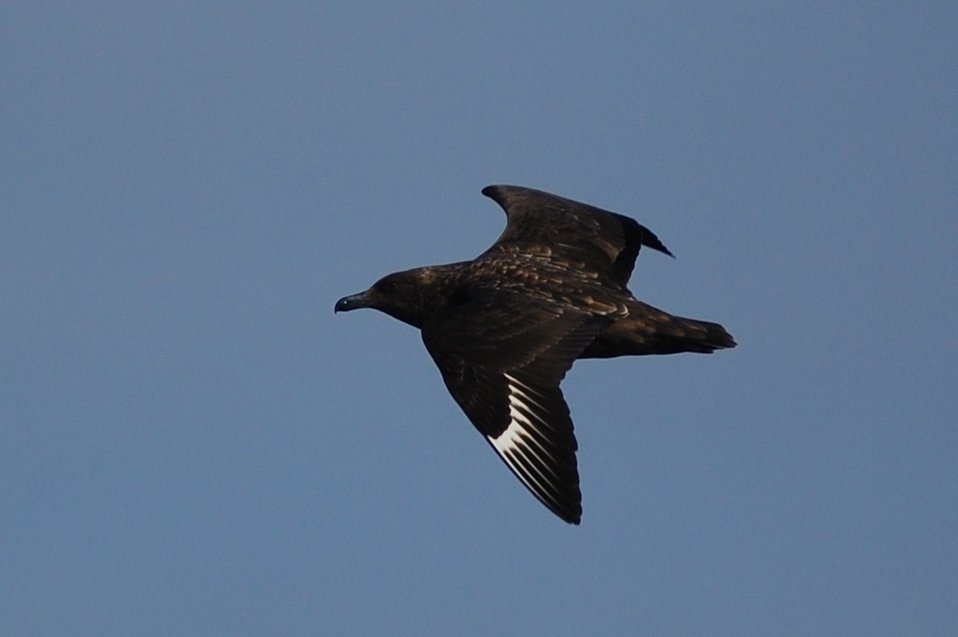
Skua.